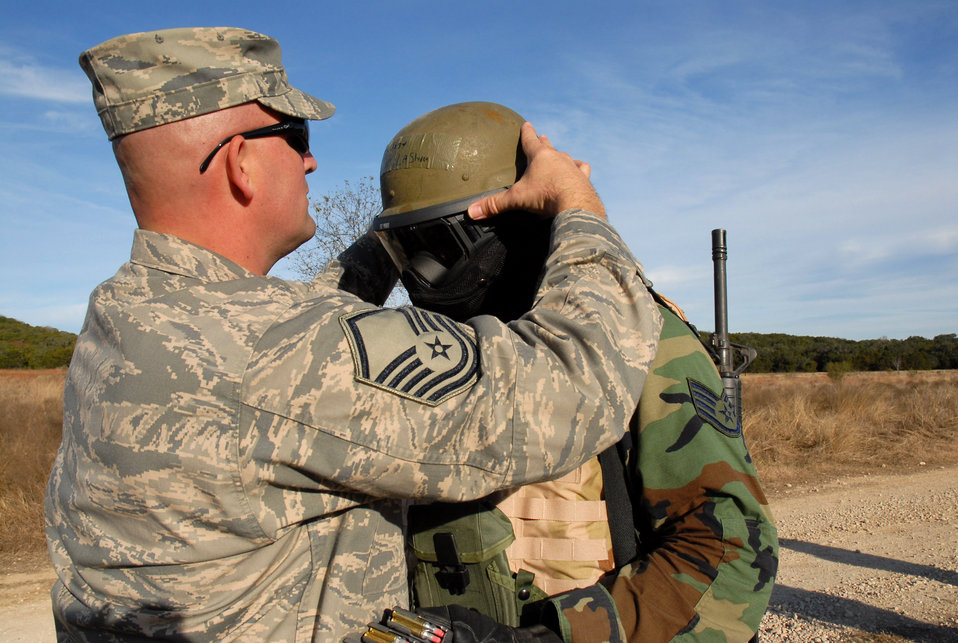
Battlefield training makes warriors out of Airmen

Master Sgt. Norman Watson fits a protective mask to a student's helmet prior to the final field training exercise held Dec. 20 for the Common Battlefield Airman Training Bridge course at Camp Bullis, Texas. Students fire training rounds with projectiles filled with detergent as part of a combat scenario focusing on reaction to enemy contact. Sergeant Watson is the CBAT-B course superintendant.